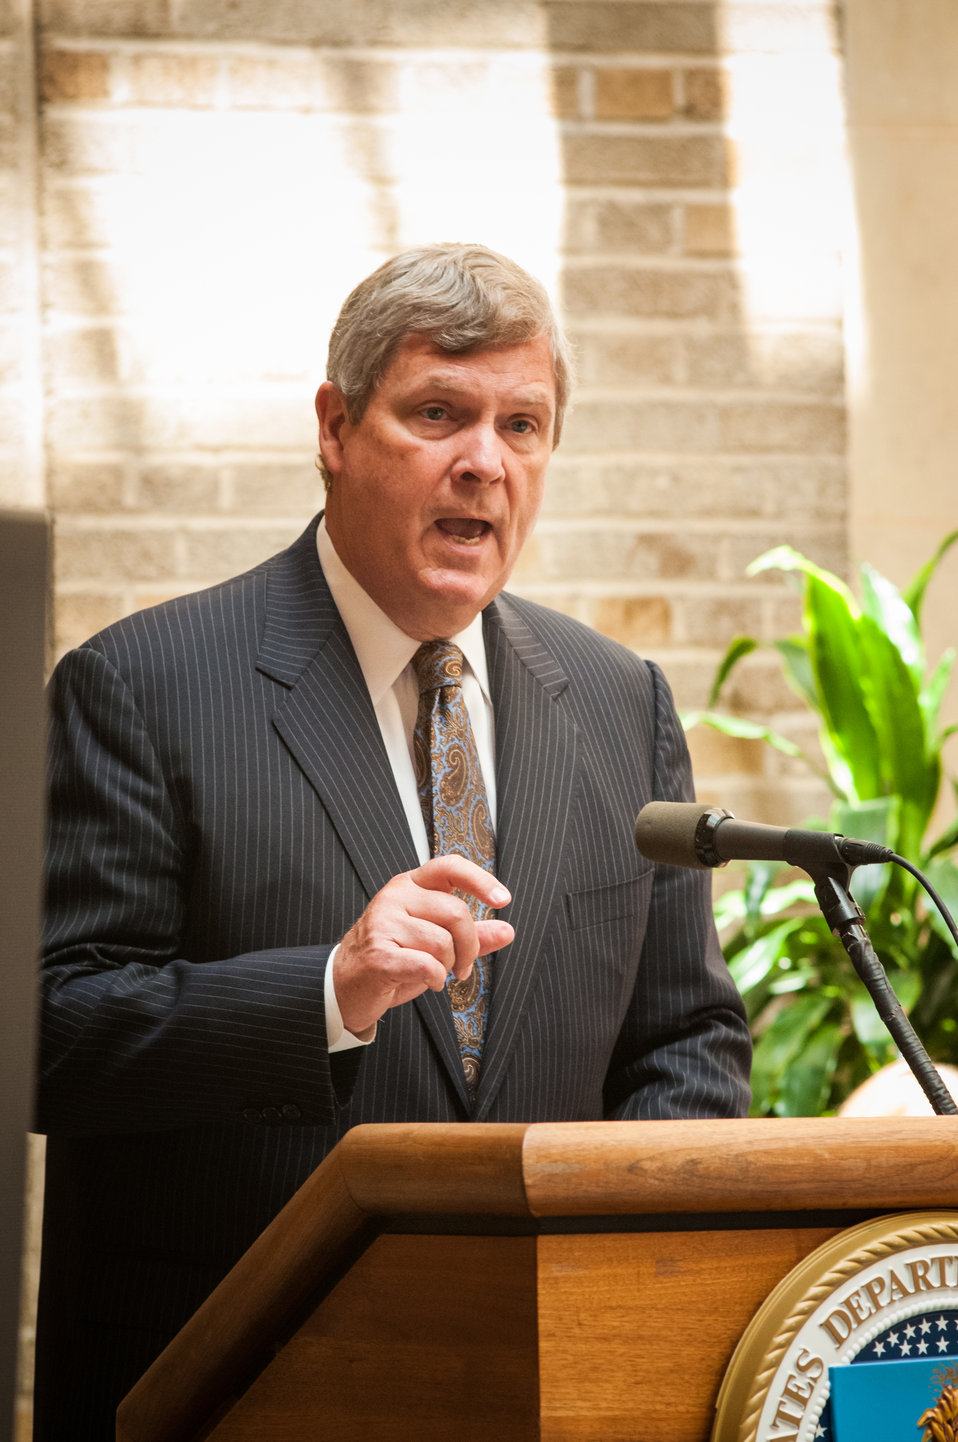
Agriculture Secretary Tom Vilsack speaks at the launching of the U.S. Food Waste Challenge held at the U.S. Department of Agriculture (USDA) in Washington, D.C. on Tuesday, Jun. 4, 2013. The U.S. Food Waste Challenge is a nationwide effort by USDA and the Environmental Protection Agency (EPA) to reduce, recover and recycle U.S. food waste. Representatives from Gills Onions/Rio Farms, Unilever, Food Marketing Institute, National Restaurant Association, Grocery Manufacturers Association, Food Waste Reduction Alliance, Feeding America and Rock and Wrap It Up! were also present.